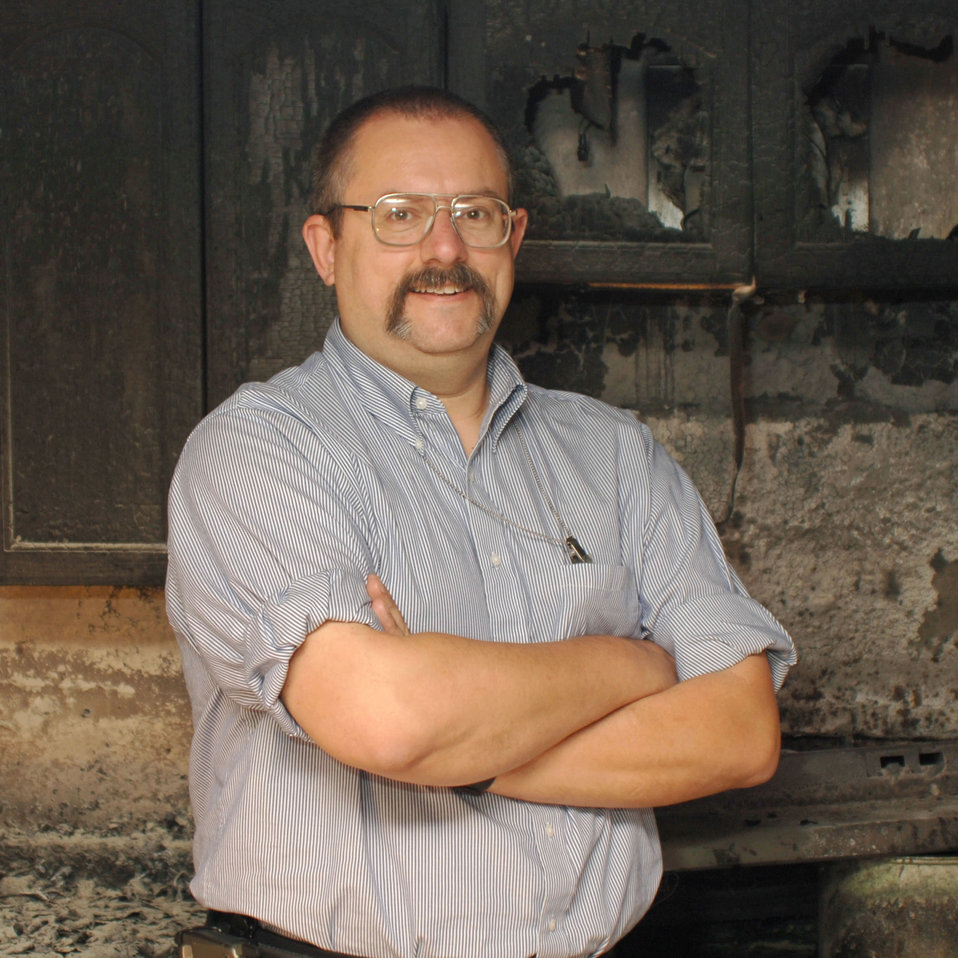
Daniel Madrzykowski

NIST's Daniel Madrzykowski is a finalist for the 2013 Service to America medals.